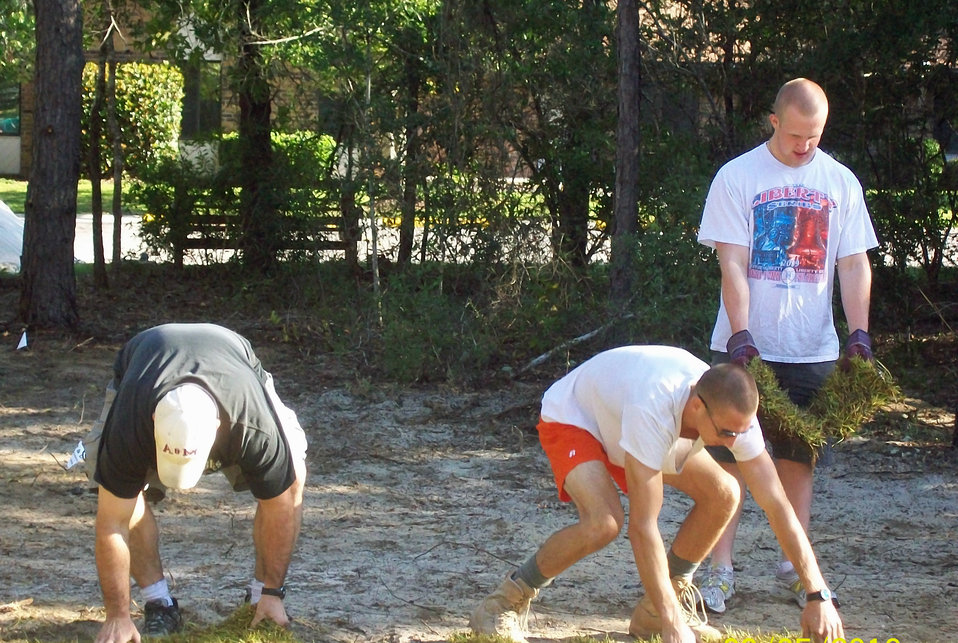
TACP park

Three Tactical Air Control Party Airmen from Hurlburt Field, Fla., work together to help build the new park Sept. 5, 2010 at the Air Force Enlisted Village at Shalimar, Fla.